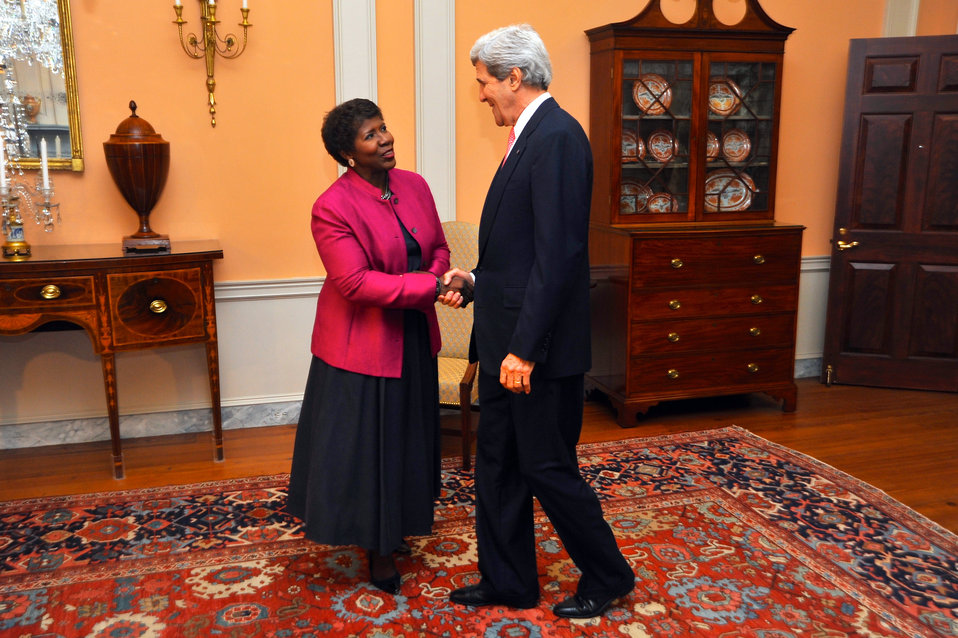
Secretary Kerry Greets PBS NewHour Host Ifill Before Policy Interview

U.S. Secretary of State John Kerry shakes hands with PBS NewsHour host Gwen Ifill in the Monroe Room at the Department of State before the two sat down on May 29, 2014, for an interview focused on an array of foreign policy topics.